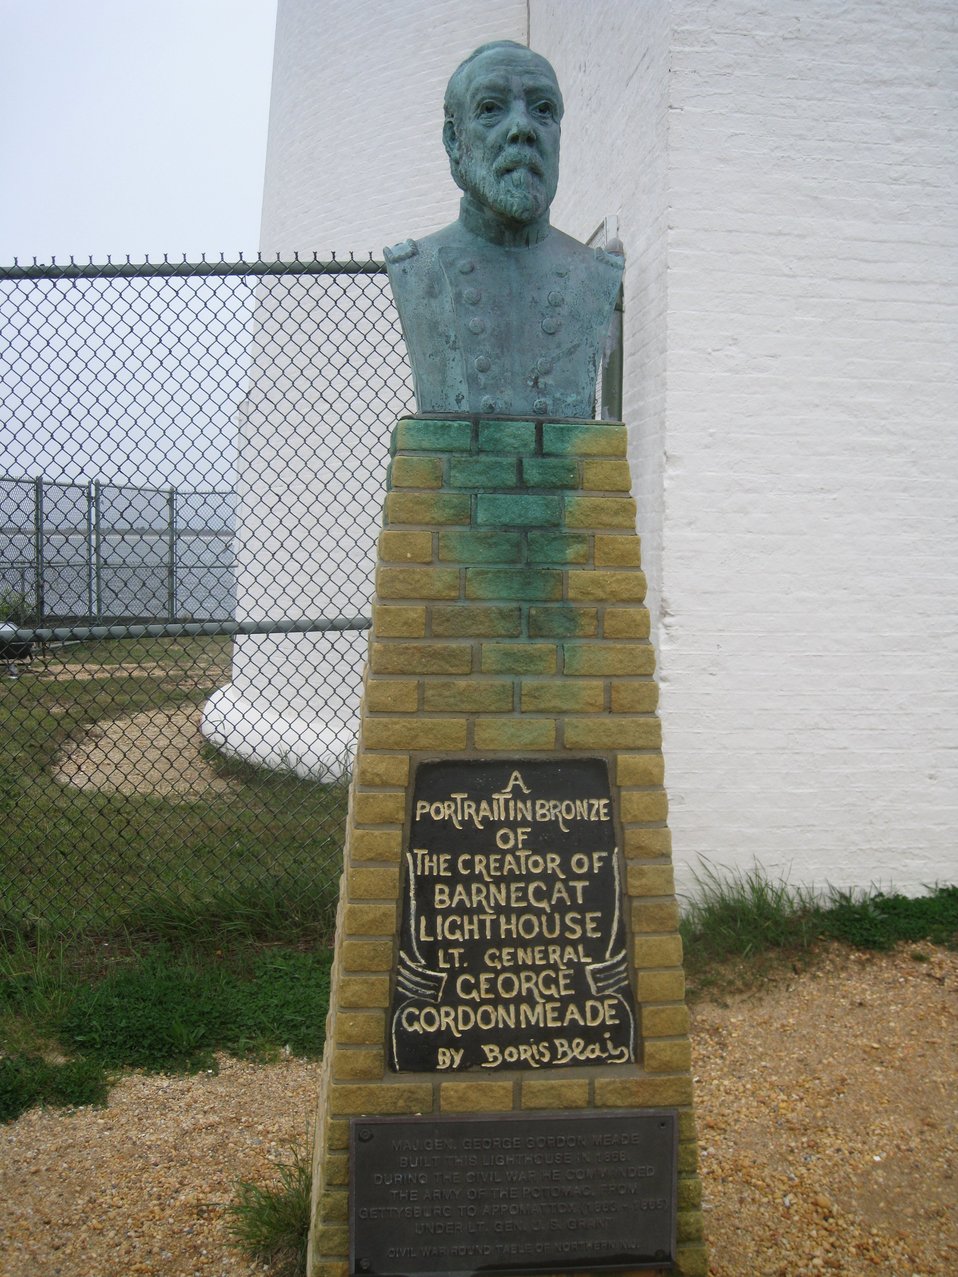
Lieutenant General George Gordon Meade, the engineer in charge of building Barnegat Lighthouse prior to the Civil War.